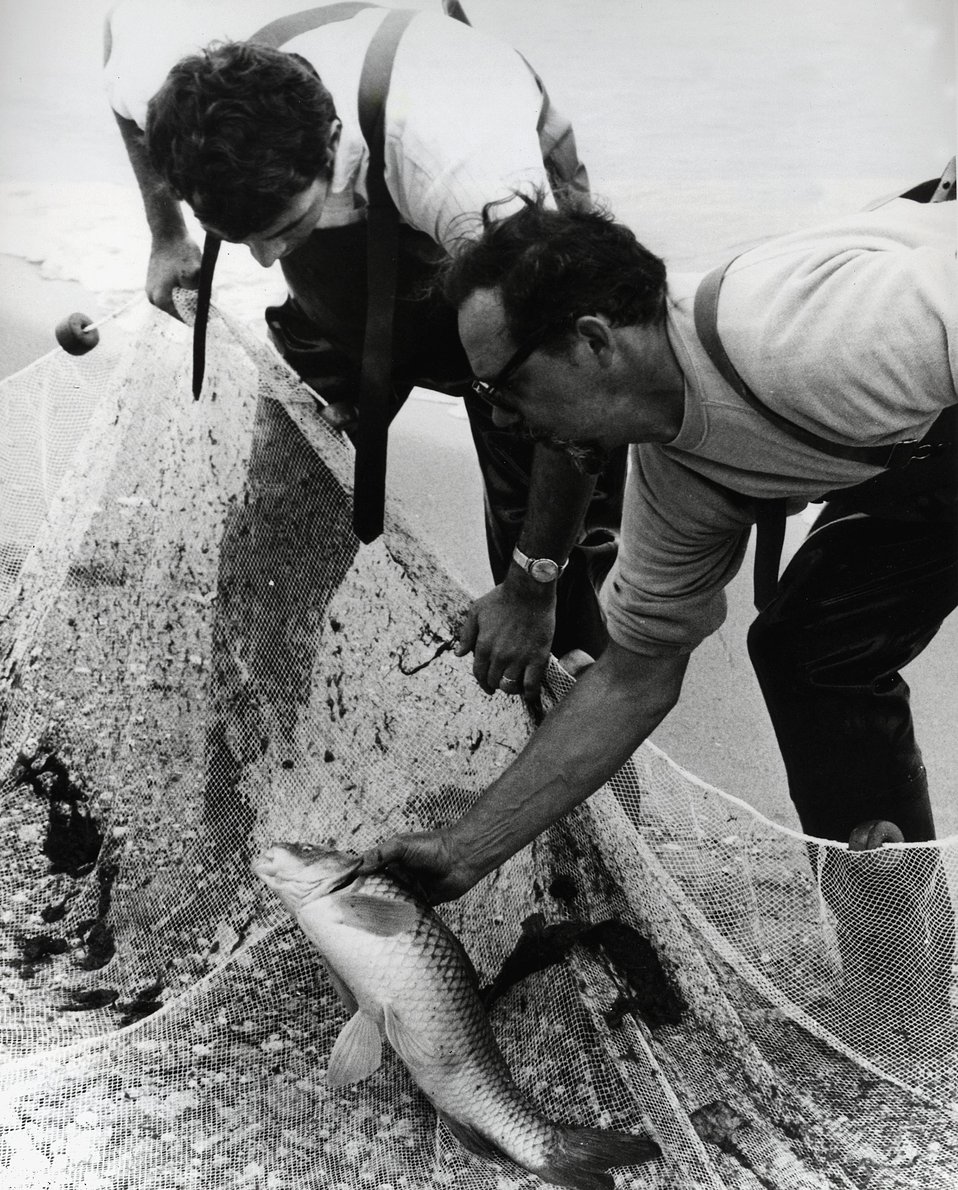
Researchers from the DOE's Argonne seine for fish in the vicinity of the power plant on Lake Michigan., 1972.